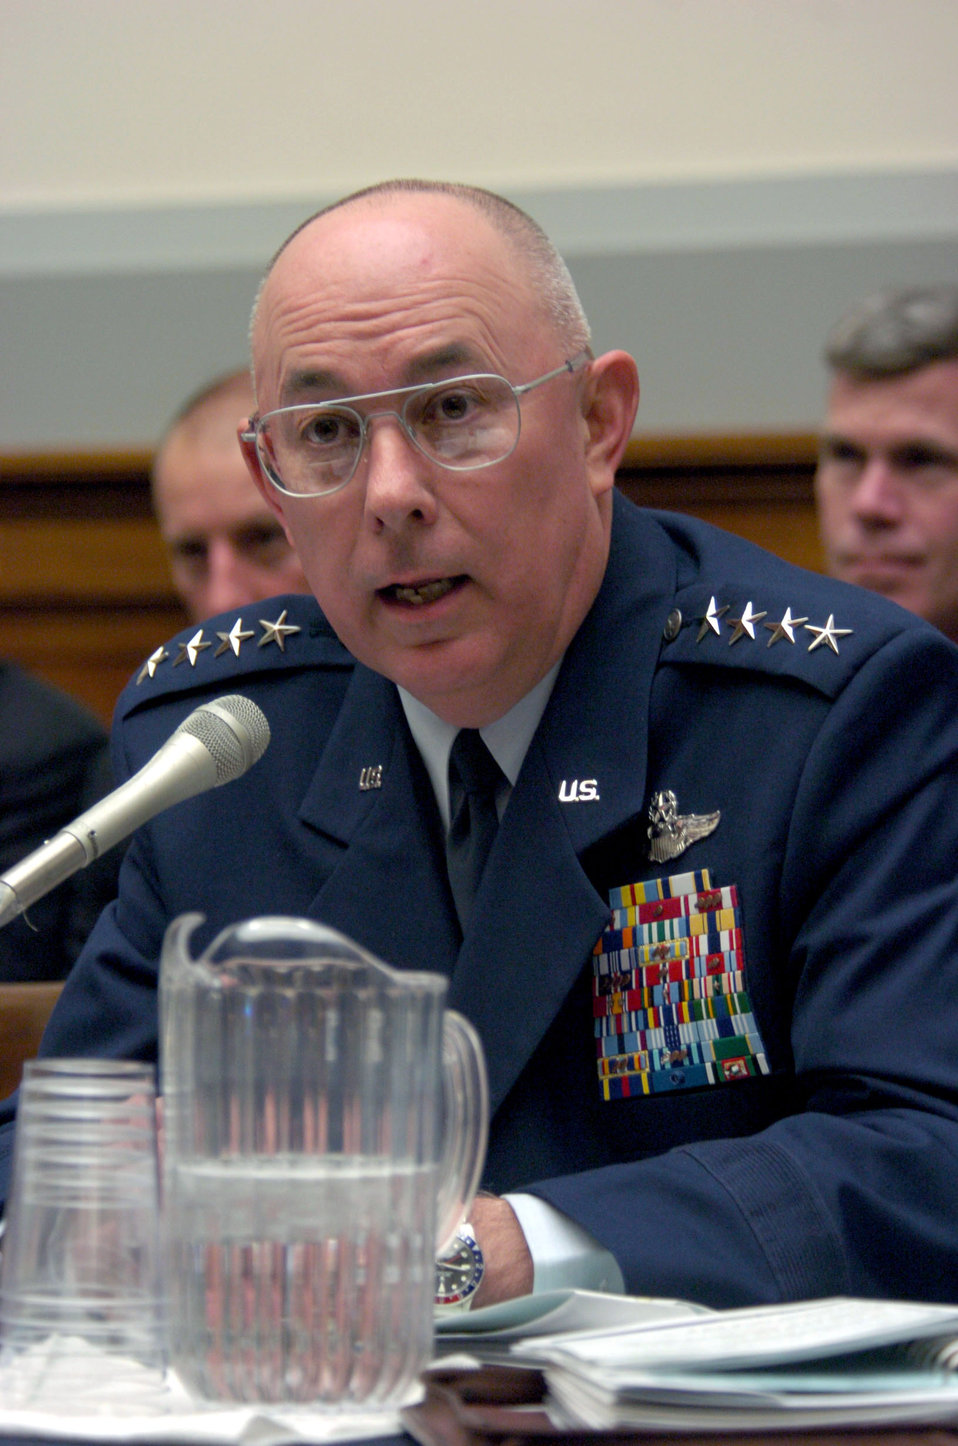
General Moseley testifies

WASHINGTON -- Gen. T. Michael Moseley, Air Force vice chief of staff, testifies on the state of Air Force readiness during a hearing of the House Armed Services Committee subcommittee on readiness March 3.